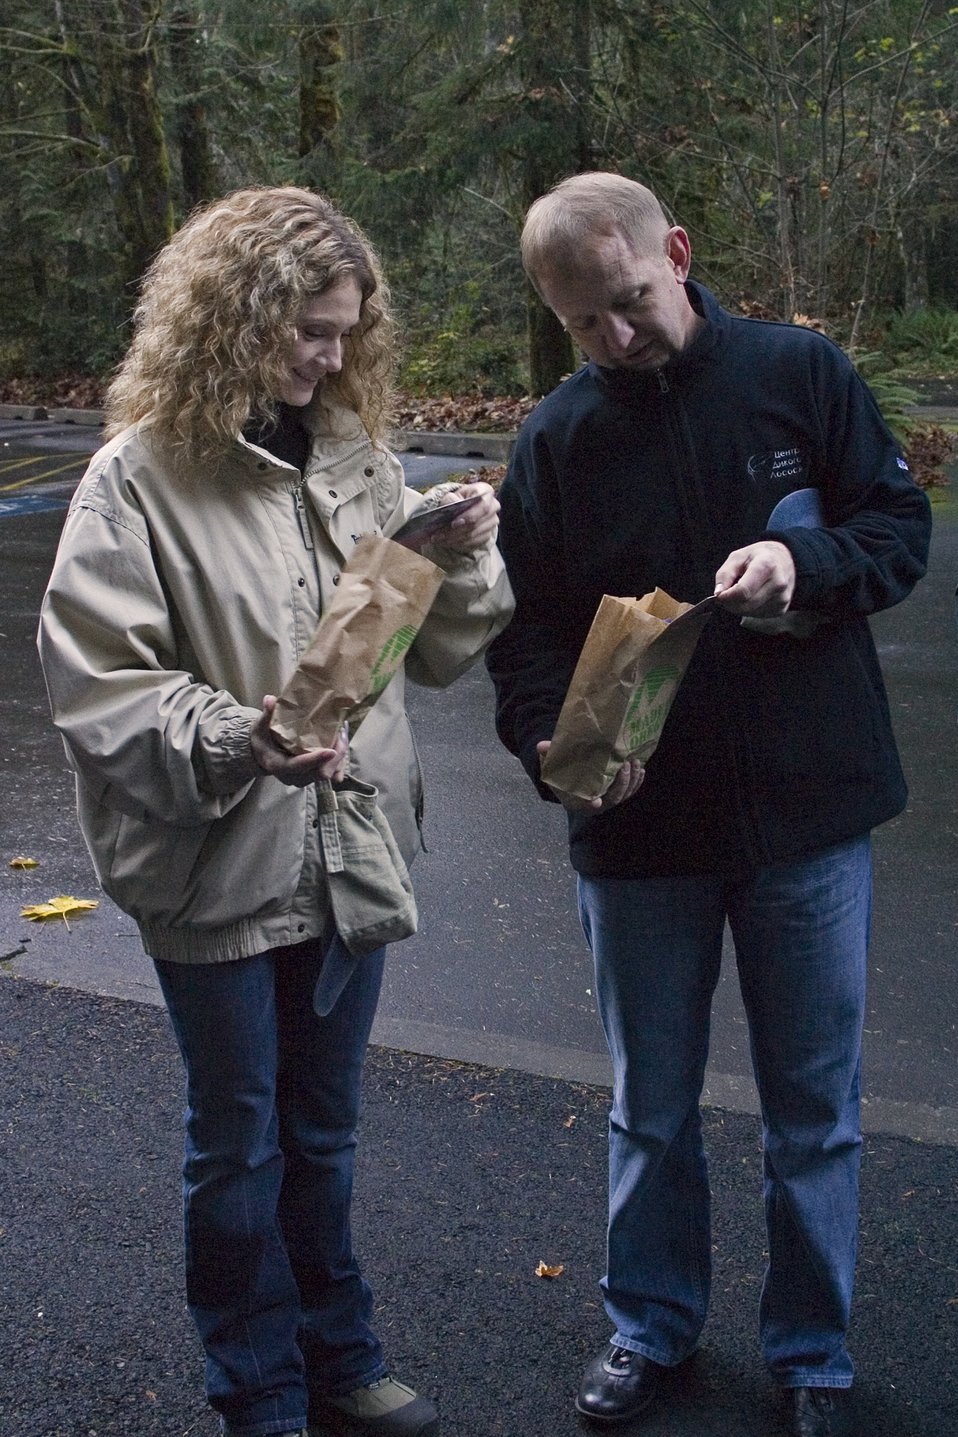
Alexander Chistyakov, Vice-Governor of Kamchatka, Oksana Rudenko Kamchatka Regional Administrator look through a bag of gifts from a Made-in-Oregon Store presented to them by the Reynolds Natural Resource Academy 12th and 11th grade students.